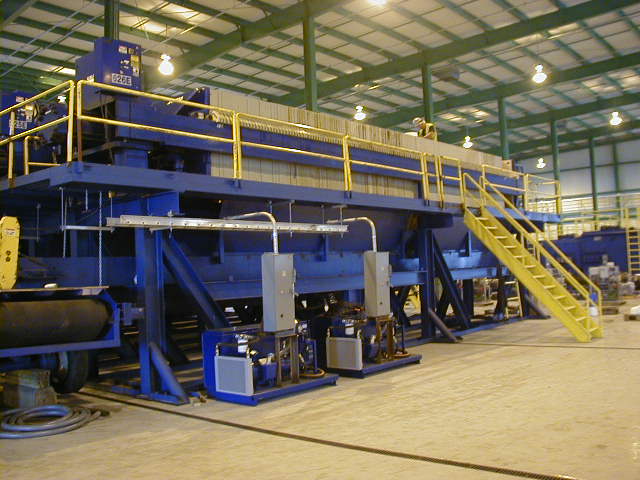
2005, a closer look at a filter press